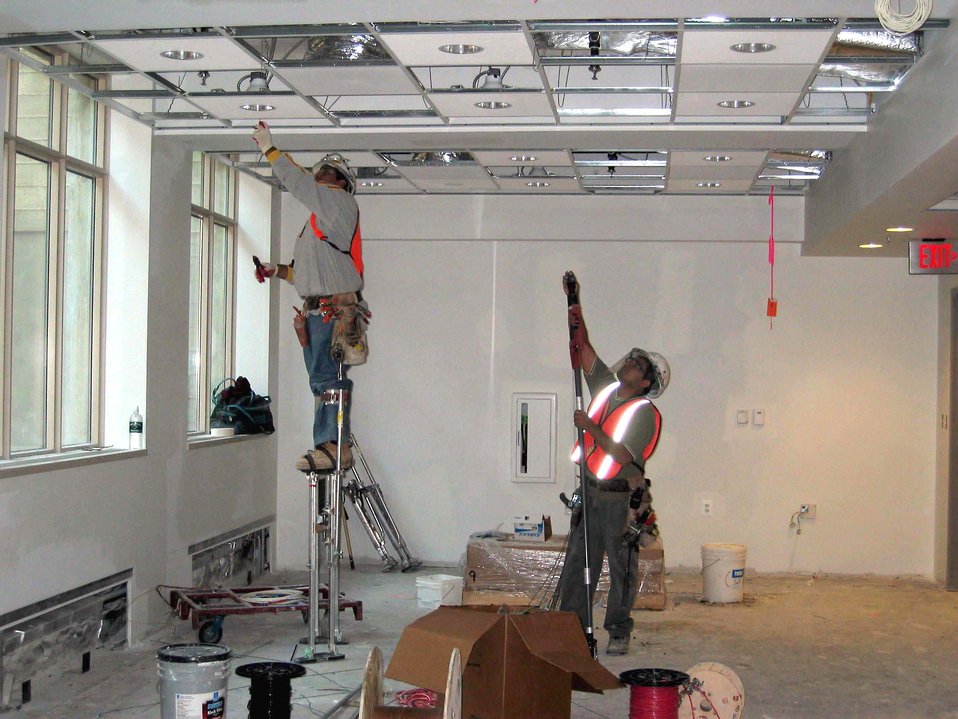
Wedge 2

WASHINGTON -- Contractors work on the ceiling in a conference room in Wedge 2 of the Pentagon. The $2.1 billion renovation is slated for completion in 2010.